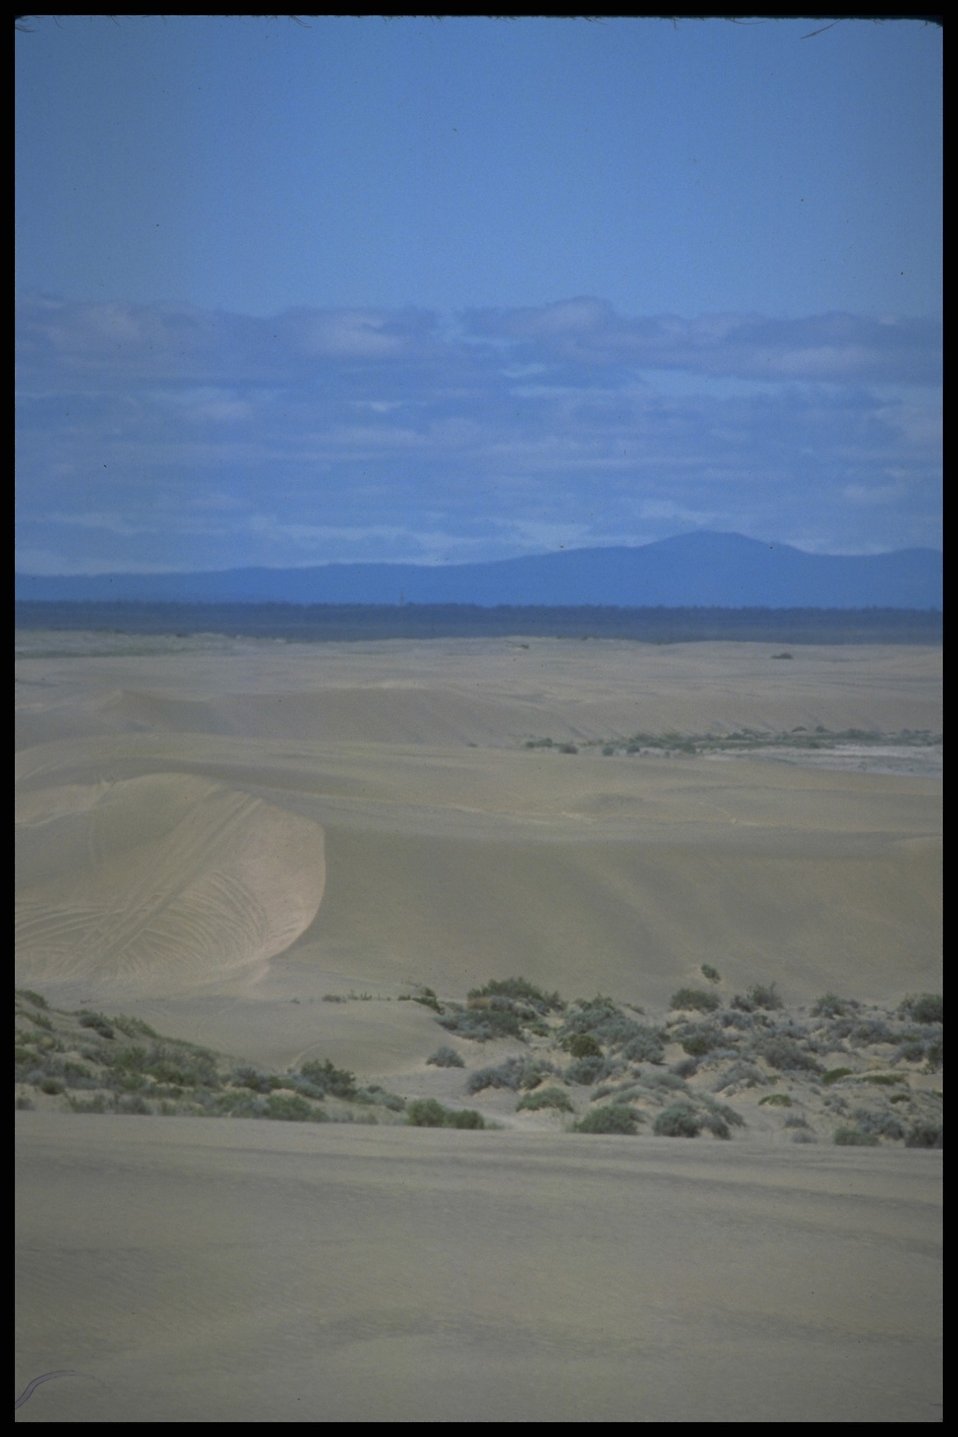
Sand Dunes at Christmas Valley, Lakeview District.